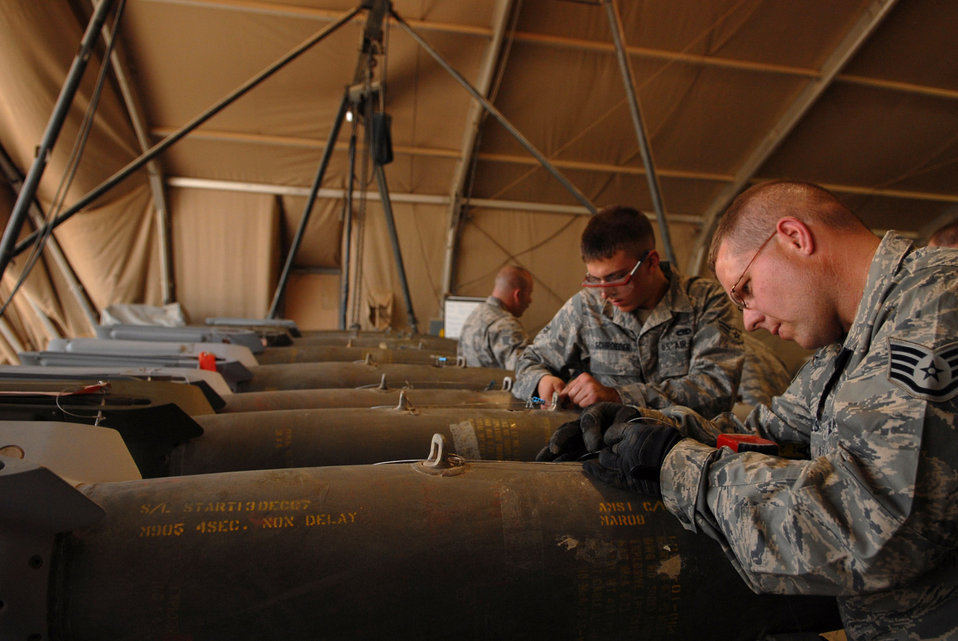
Some assembly required

Staff Sgt. Russell Michels connects a guided bomb unit-12 arming lanyard to a bomb body June 16 at Joint Base Balad, Iraq. This lanyard, which is connected directly into the aircraft, will initiate internal components and detonation timing according to the aircraft specifications. The GBU-12 is a laser-guided munition. Sergeant Michels is a 332nd Expeditionary Maintenance Squadron munitions systems specialist deployed from Hancock Field Air National Guard Base, Syracuse, NY.